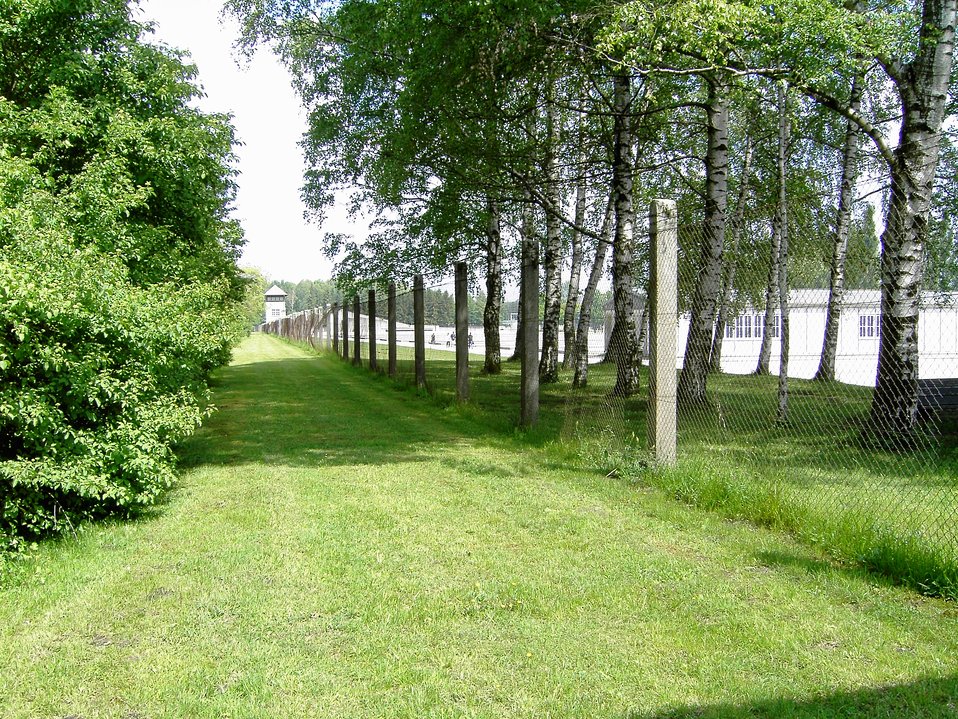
The Dachau Perimeter Fence Summer 2004